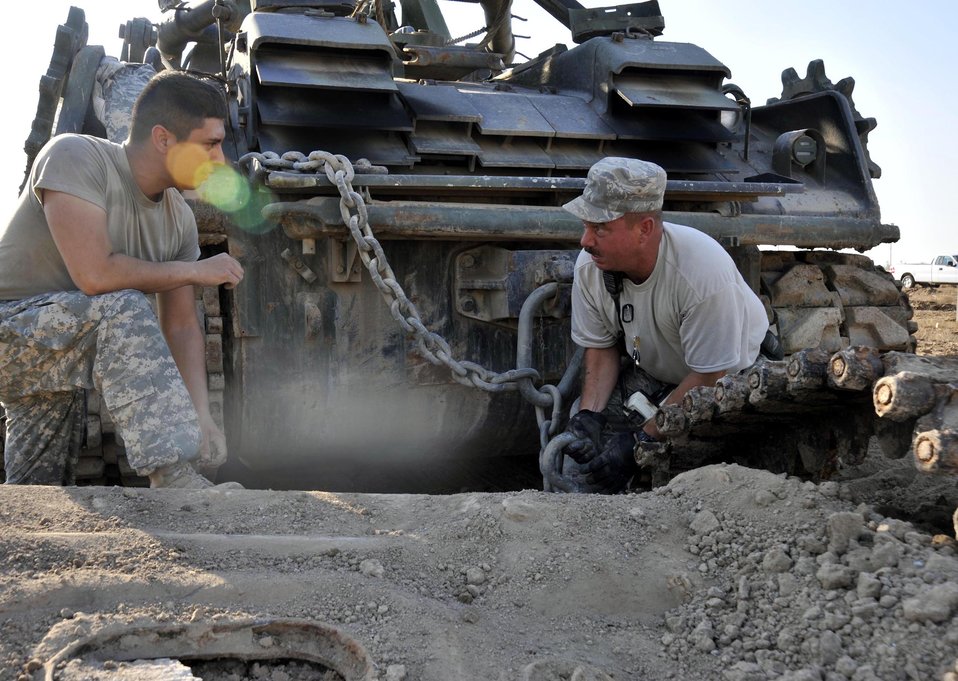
Sather Airmen clear away the debris of war, improve airport safety

Staff Sgt. Walter Kittle and Army Sgt. Daniel Torres work together to use an M-88 tank recovery vehicle to pull an old Iraqi T-72 Main Battle Tank from its grave on the airfield at Sather Air Base, Iraq. The tank was an obstruction to safe airfield operations and had to be removed. Sergeant Kittle is assigned to the 447th Expeditionary Civil Engineer Squadron. Sergeant Torres is assigned to the 503rd Maintenance Company.